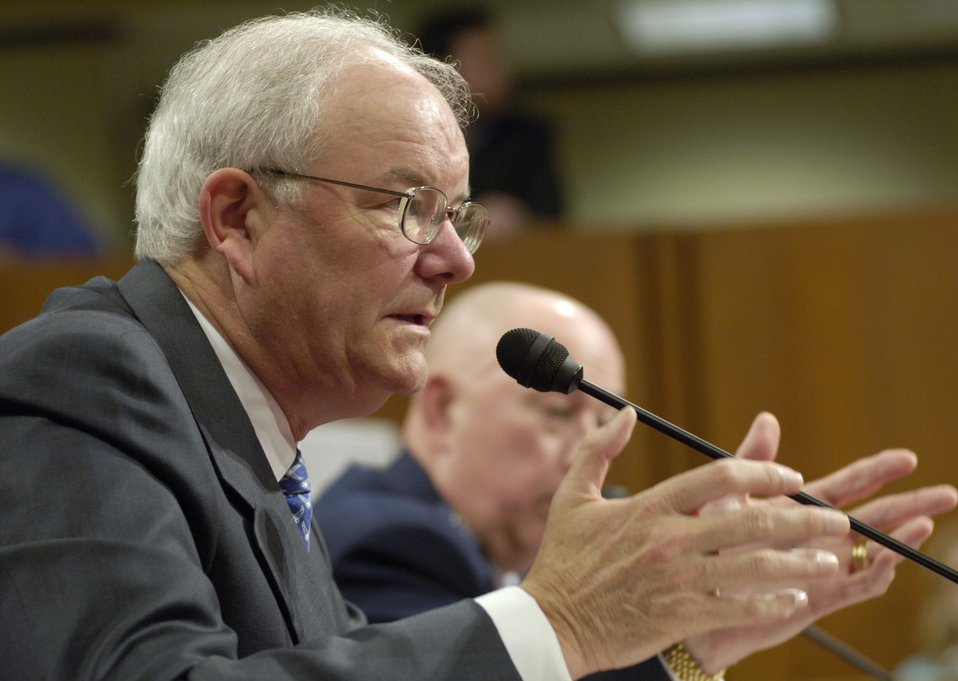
Testimony on Capitol Hill

Secretary of the Air Force Michael W. Wynne answers questions during a Senate Armed Services Committee hearing Thursday, March 2, 2006, in Washington, D.C.